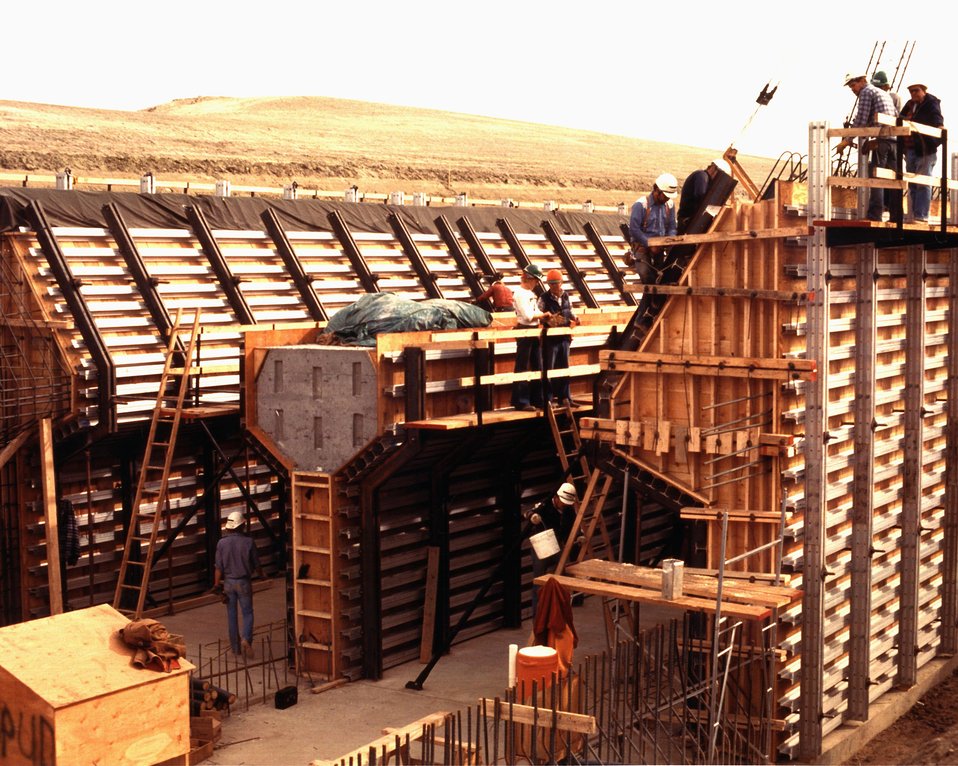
WORKERS ARE FRAMING THE FOUNDATION OF THE GREAT PLAINS PLANT

THE GREAT PLAINS COAL GASIFICATION PLANT WILL PRODUCE AN AVERAGE OF 125 MILLION CUBIC FEET PER DAY OF SYNTHETIC HIGH-BTU GAS. THIS GAS, A DIRECT SUBSTITUTE FOR NATURAL GAS, IS TO BE MARKETED THROUGH AN INTERSTATE NETWORK OF GAS PIPELINES. APPROXIMATELY 14,000 TONS OF LIGNITE WILL BE FED EACH DAY INTO 12 LURGI GASIFIERS (2 ADDITIONAL GASIFIERS WILL BE KEPT ON STANDBY). GAS EXITING THE GASIFIERS WILL BE COOLED, CLEANED OF SULFUR, AMMONIA, AND OTHER IMPURITIES, THEN UPGRADED TO A PIPELINE QUALITY SYNTHETIC NATURAL GAS. THE LURGI PROCESS WILL USE THE LARGER-SIZED COAL FROM THE PLANT'S COAL CRUSHING OPERATION WHILE SOME 8,000 TONS PER DAY OF THE SMALLER SIZE COAL WILL BE SOLD TO AN ADJACENT STEAM ELECTRIC GENERATING PLANT. THE GREAT PLAINS PLANT WILL ALSO PRODUCE 93 TONS PER DAY OF AMMONIA AND 85 TONS PER DAY OF SULPHUR.